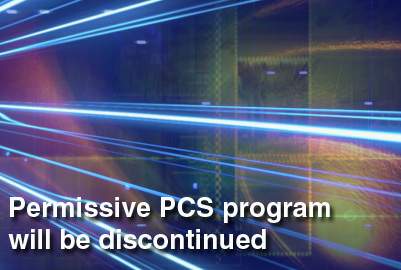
Air Force officials discontinue permissive PCS policy

Air Force officials here have announced the permissive permanent change of station policy will be discontinued; however, other policies have changed lifting restrictions from the join spouse and base-of-preference programs.